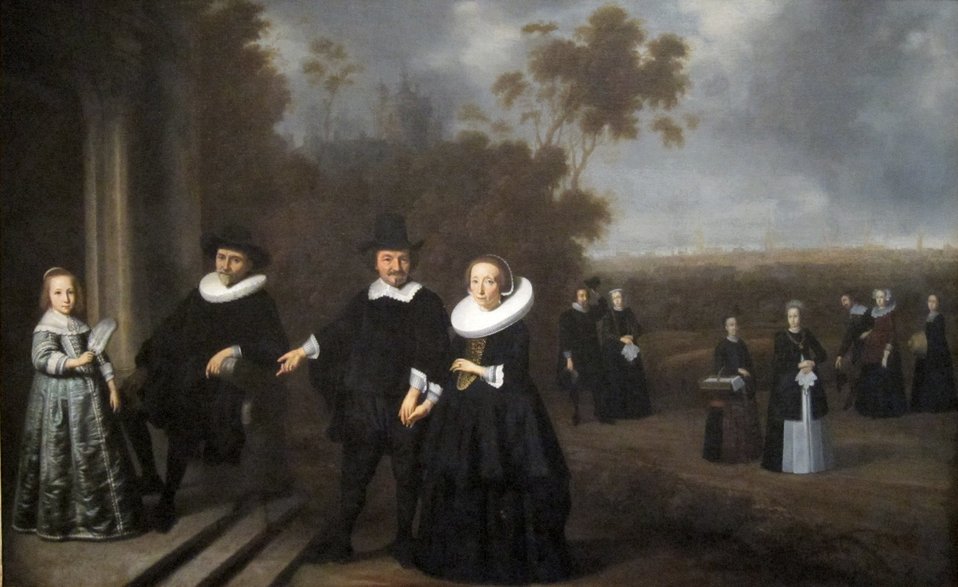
'The Burgomaster's Family', Dutch oil on canvas painting, c. 1640, Honolulu Academy of Arts